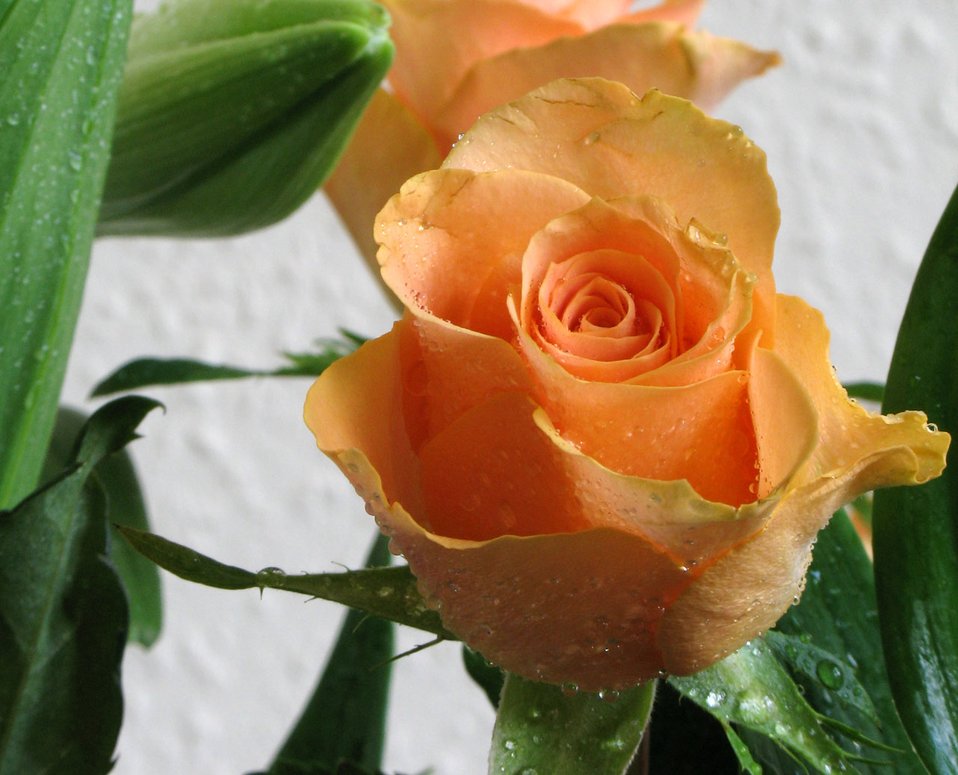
Orange rose

An orange rose against the white wall.